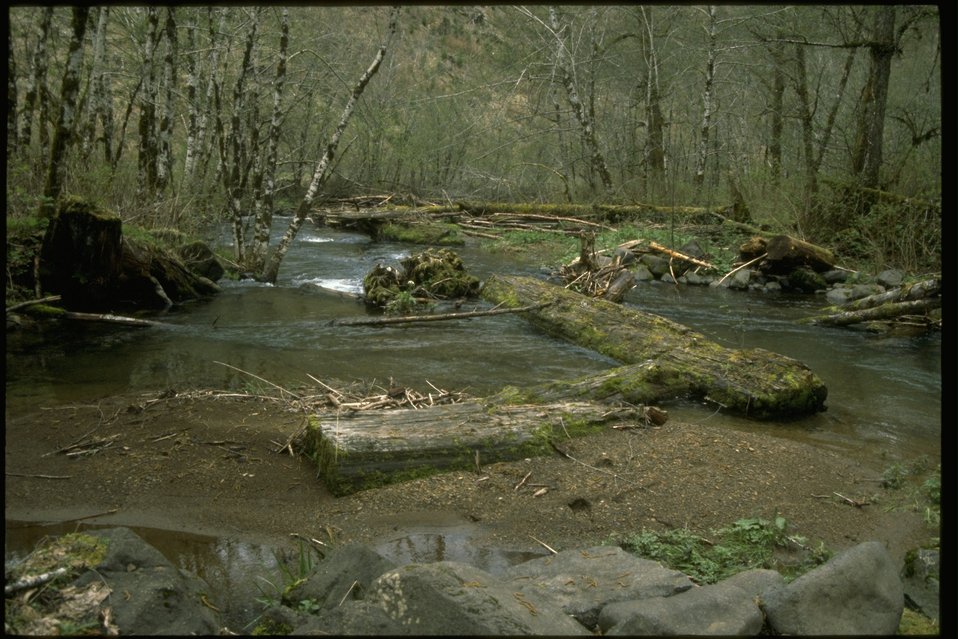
Stream Structures in the Nestucca River.